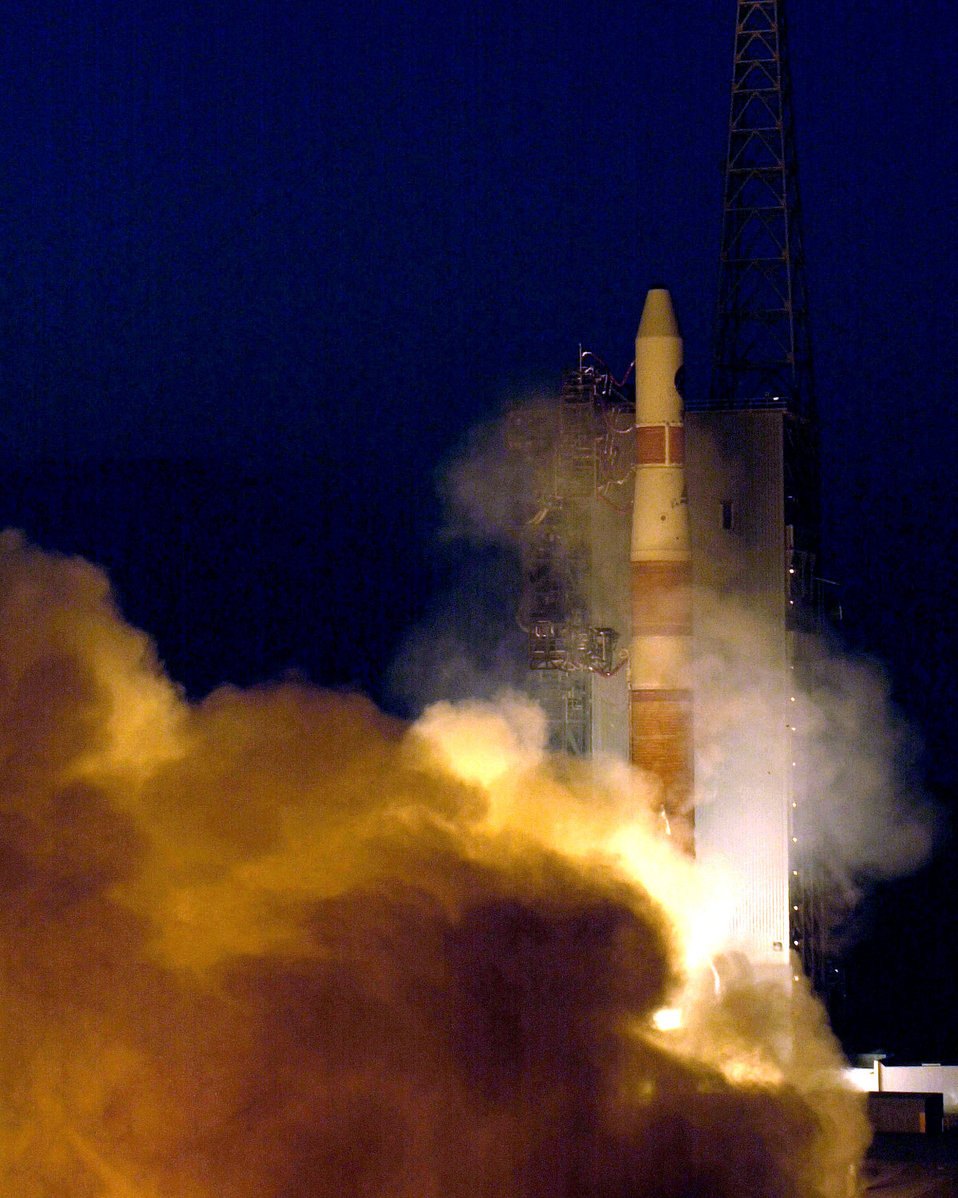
Delta IV launch successful

A Delta IV rocket carrying a payload for the National Reconnaissance Office lifts off from Space Launch Complex-6 at Vandenberg Air Force Base, Calif., on Tuesday, June 27.